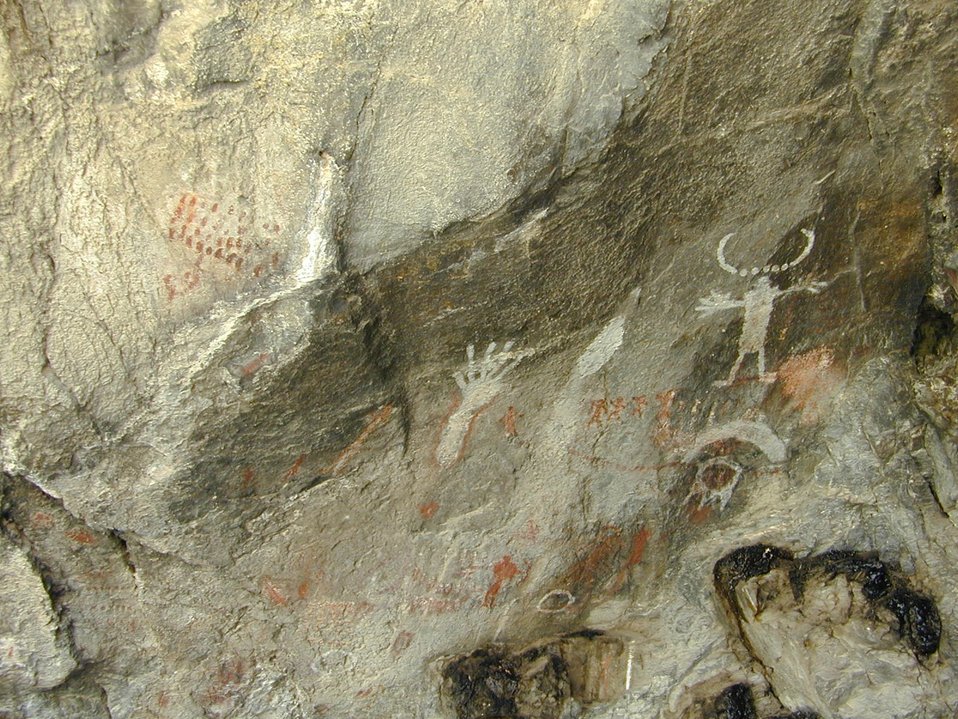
Birch Creek Valley Salmon Field Office Upper Columbia-Salmon Clearwater District